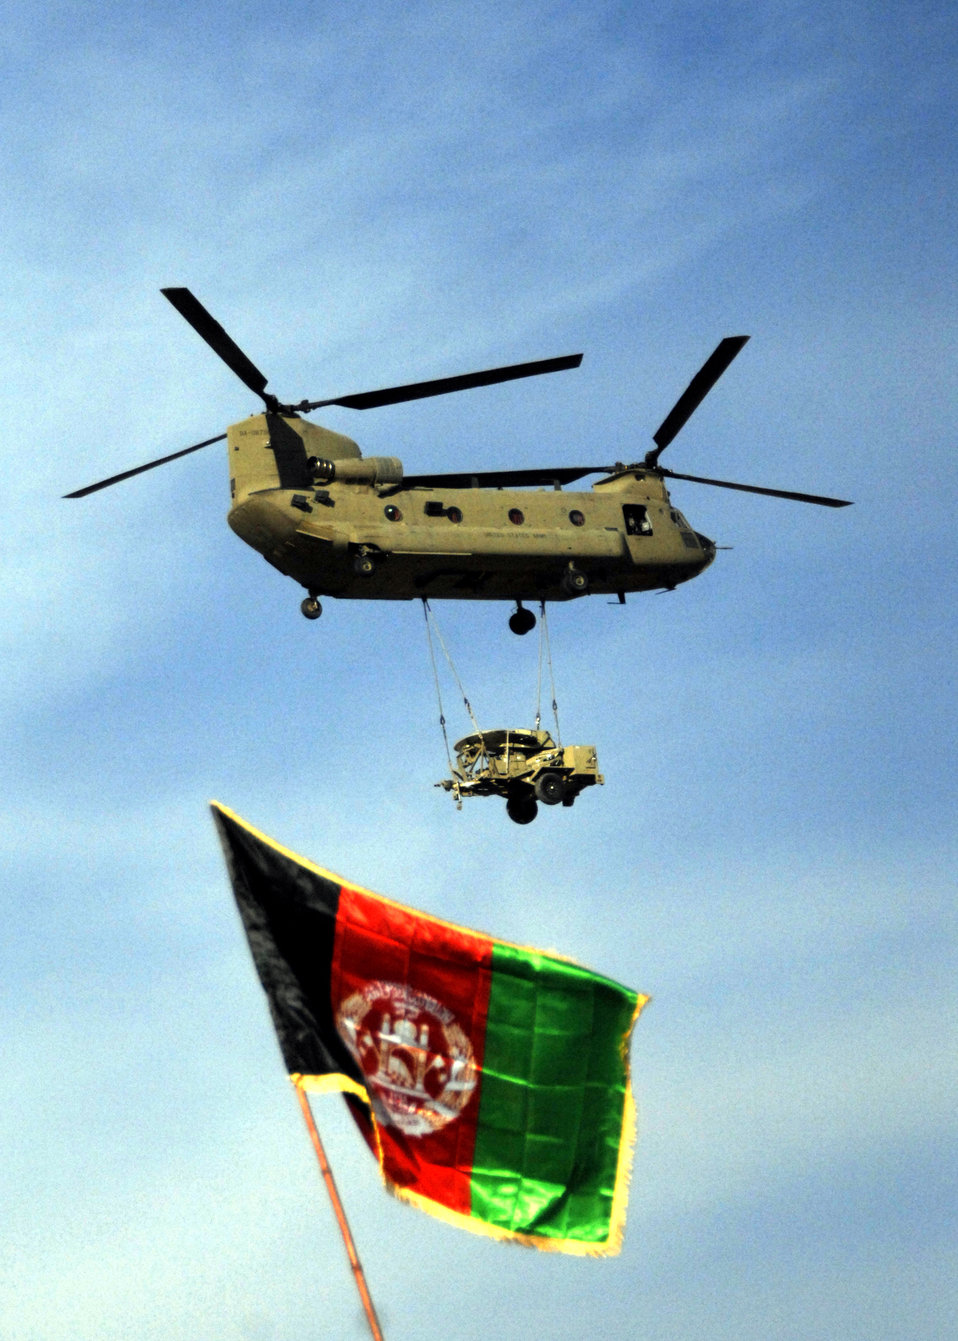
American servicemembers bridge gap between Afghan provinces, relationships

A U.S. Army helicopter flies over Afghanistan's flag on Dec. 26, 2009, at Zabul Province, Afghanistan. Afghans celebrated the Arghandab Bridge opening. The bridge is important to security in the winter and spring months when forces were previously limited to being supported by helicopter due to high water levels.